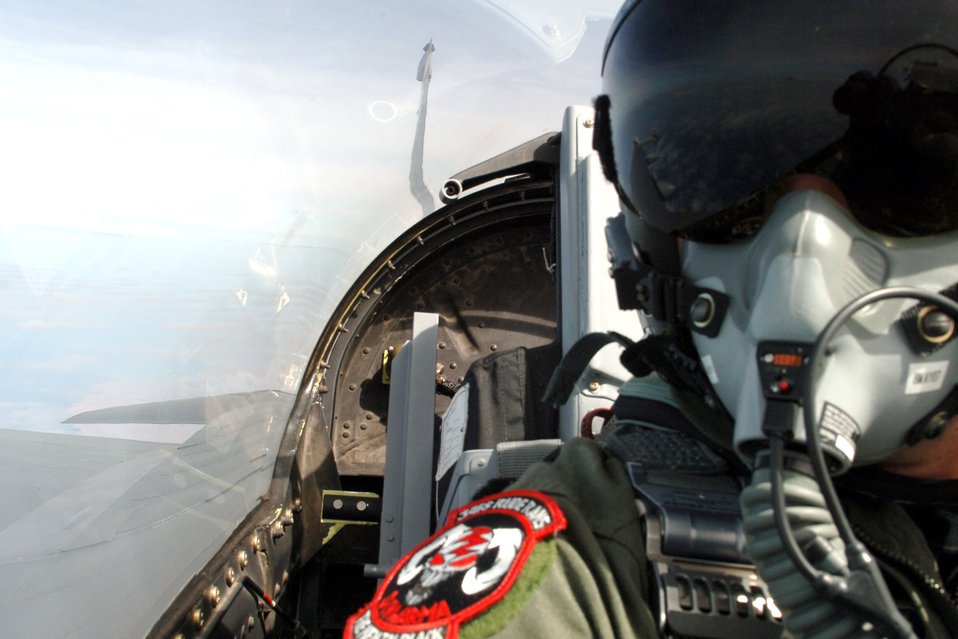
Airmen work alongside Peruvian military during joint exercise

An F-16 Fighting Falcon piloted by Lt. Col. Tom